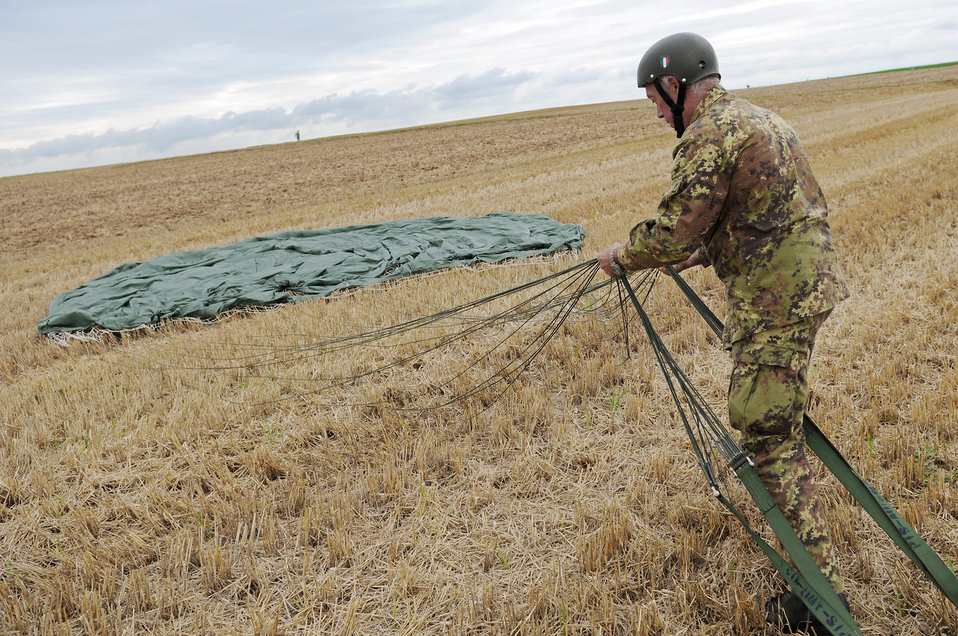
5 NATO countries take part in jump week

Italian Army soldier Giovanni Cacciari packs his parachute after landing Aug. 13 at the Bunker drop zone in southwestern Germany. U.S. soldiers and Airmen did a combined airborne drop with four other NATO countries. German, Italian, Belgium, and Dutch Armies attended the airborne drop officially called International Jump Week.